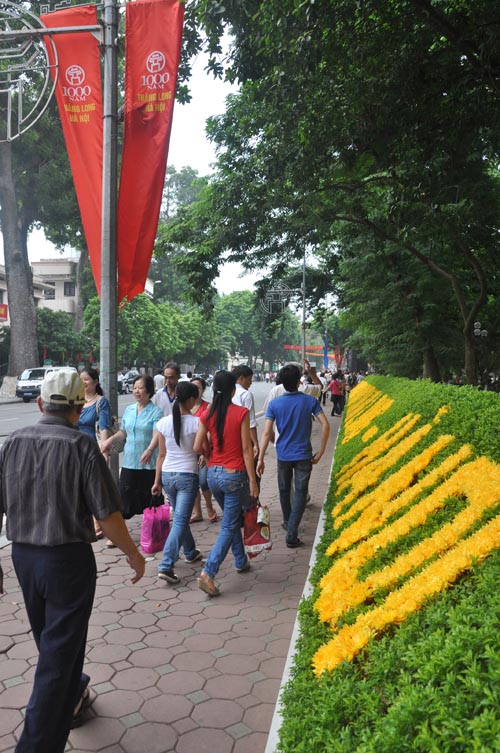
Hanoi residents take to the streets to celebrate 1,000th anniversary of capital.